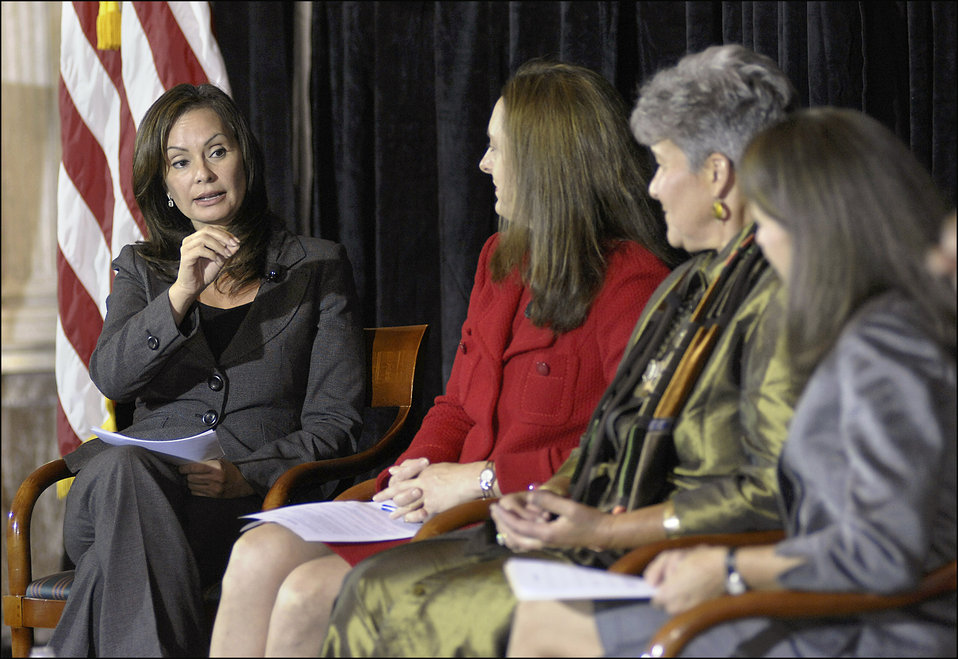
Women Inaugural Women in Finance Leadership Series, 10/19/10

Treasurer of the United States Rosie Rios, Assistant Secretary for Intelligence and Analysis Leslie Ireland, Assistant Secretary for International Markets and Development Marisa Lago and Assistant Secretary for Financial Markets Mary John Miller at the inaugural Women in Finance Leadership Series at Treasury.